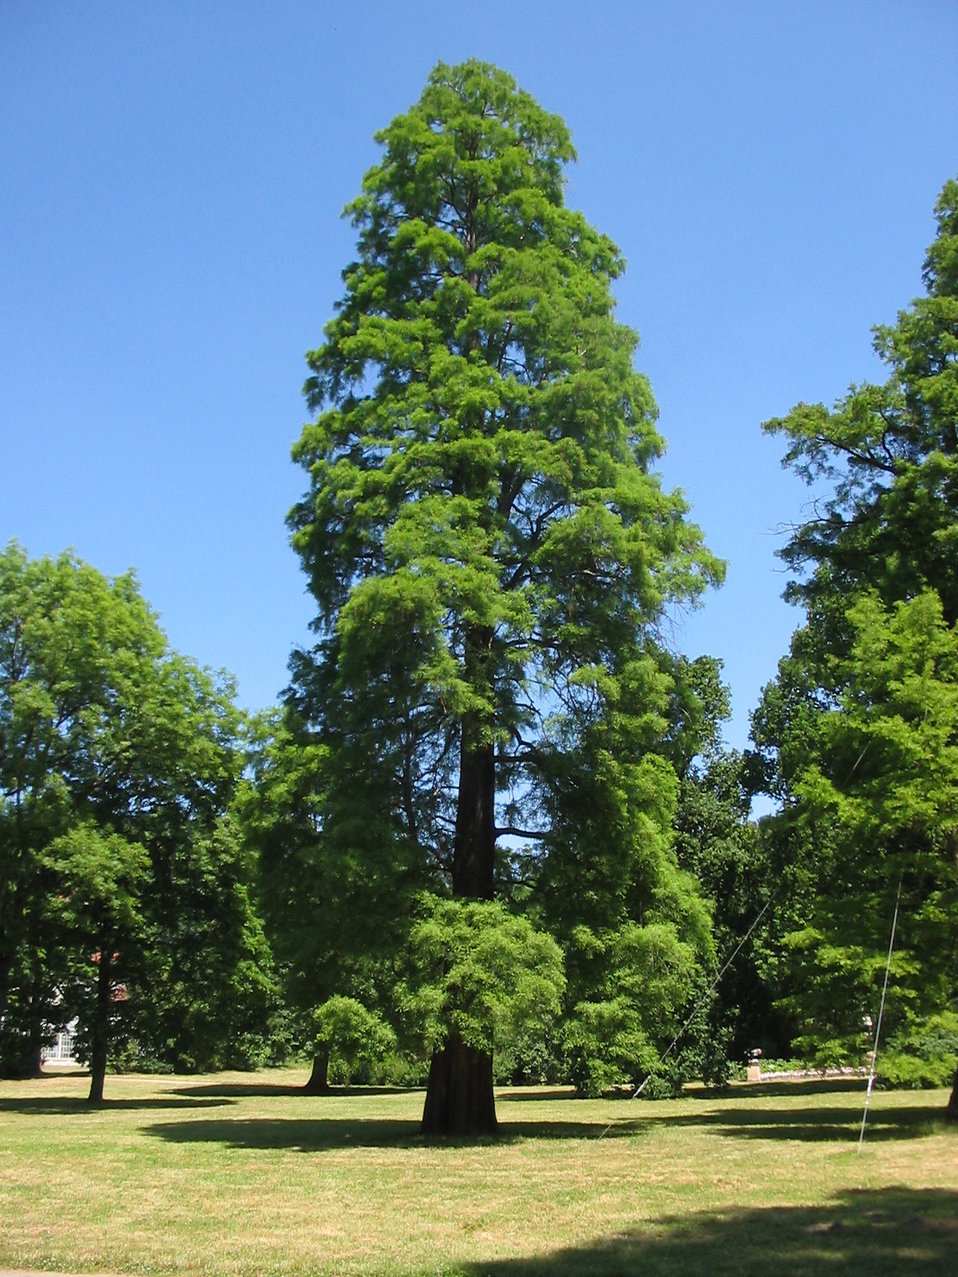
Taxodium distichum in the park of Schloss Pillnitz, Dresden